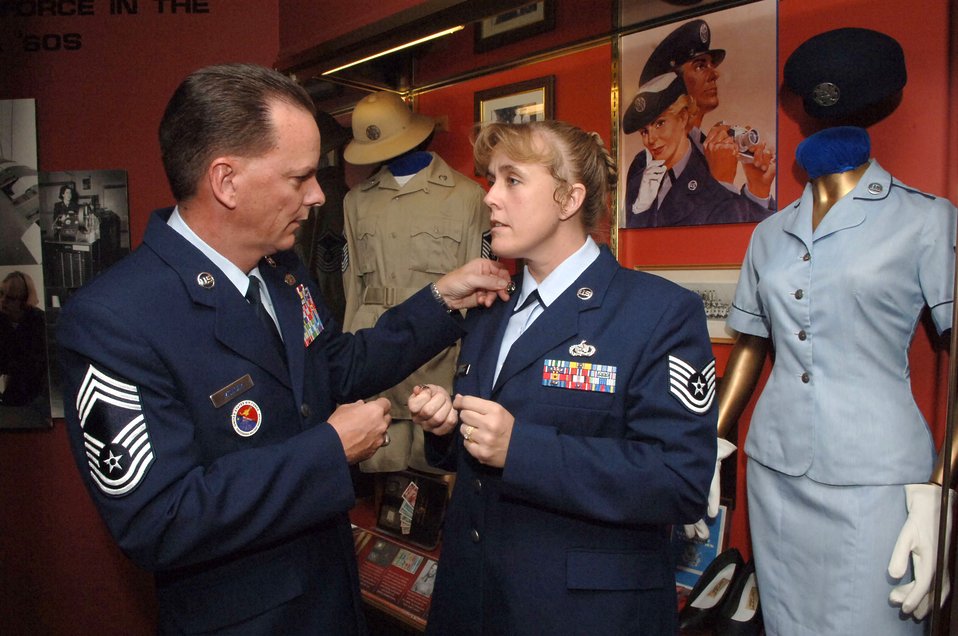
Old is new again

Chief Master Sgt. Malcolm McVicar explains the history of the circled U.S. lapel insignia to Tech. Sgt. Sharee Hileman at the Air Force Enlisted Heritage Research Institute at Maxwell-Gunter Air Force Base, Ala., on Aug. 8. A recent change to Air Force Instruction 36-2903 returned the circled insignia to the enlisted service dress uniform. The origin of the insignia can be traced back to 1902. The current reauthorized insignia was worn by Airmen until the early 1990s when the lapel insignia was removed from both officer and enlisted uniforms. Airmen can return to their heritage and begin wearing the circled insignia now, but must have it on by Jan. 1. In addition, senior NCOs will no longer wear the shoulder board rank effective Oct. 1. Chief McVicar is director of the heritage institute, and Sergeant Hileman is the NCO in charge.